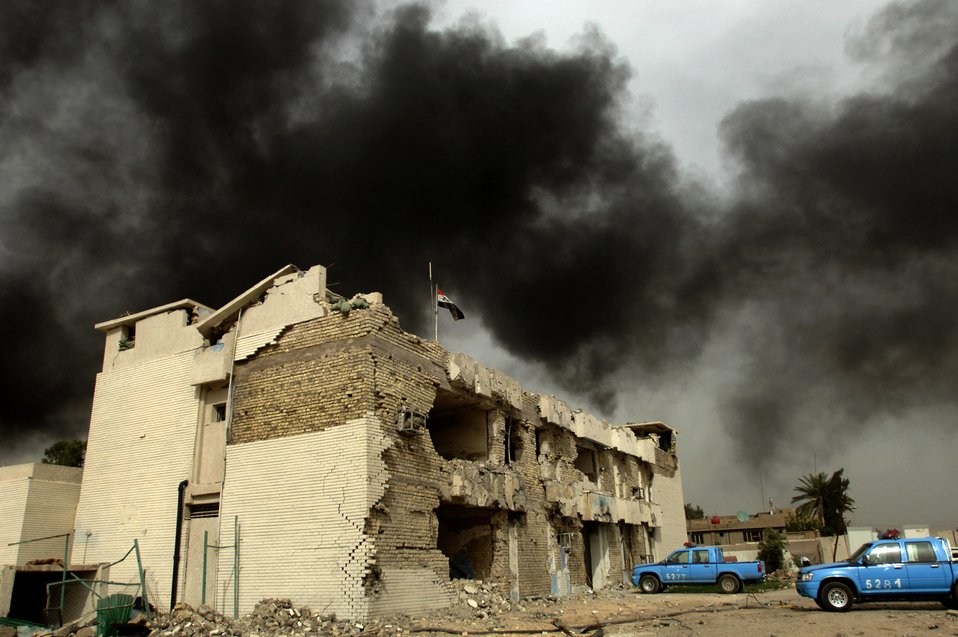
Dangerous road to progress

Despite their station being bombed, Iraqi police continue working in the unharmed areas of the station and work the streets with the help of Det. 3 from the 732nd Expeditionary Security Forces Squadron May 9 in Baghdad. Members of the 732nd ESFS perform police transition team duties of mentoring, coaching and teaching Iraqi police.